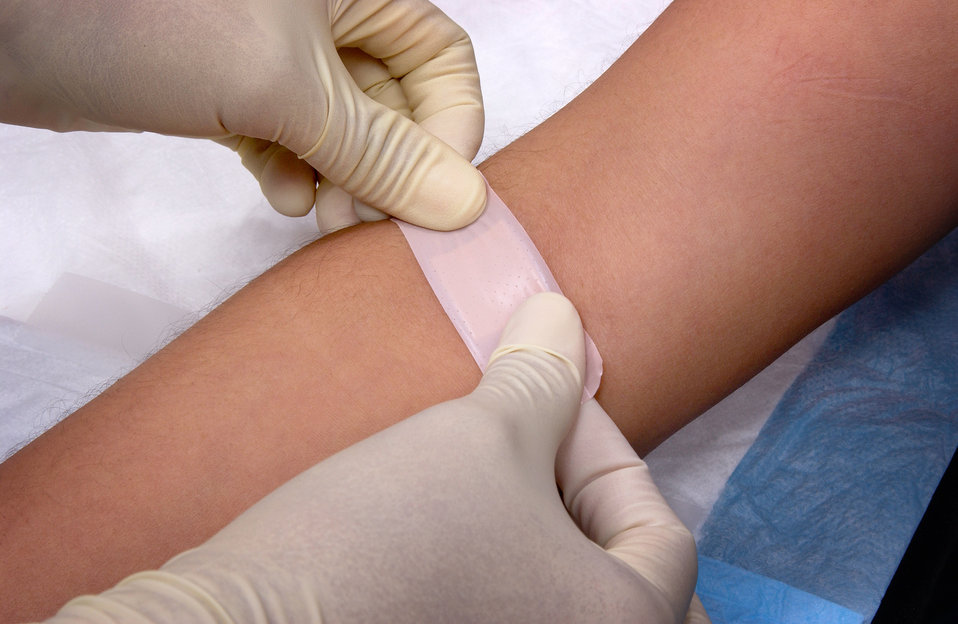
This image depicts a patient who had undergone a percutaneous antecubital venipuncture, which had been performed by a trained phlebotomist, i.e., a technician skilled in the practice of drawing blood from a patient. This image is the seventeenth in a series of 19 images outlining the steps involved in extracting blood during the venipuncture process.